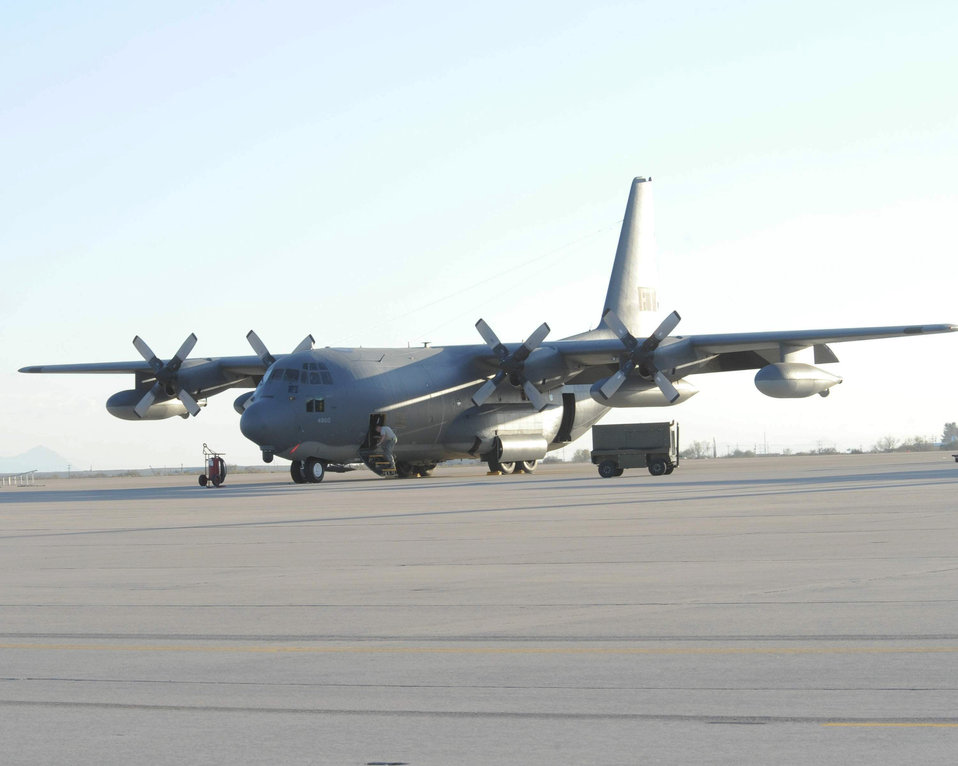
Davis-Monthan Airmen supports Haiti

A C-130 Hercules from the 79th Rescue Squadron sits on the runway Jan. 14, 2010, at Davis-Monthan Air Force Base, Ariz. Another C-130 from the squadron participated in a Haitian relief mission during the evening of Jan. 13 in Port-au-Prince, Haiti. During this mission, Airmen delivered more than 13,000 pounds of cargo. They also dropped off airfield operations personnel to help set up the airfield in Port-au-Prince and control the relief traffic in and out of the airfield.